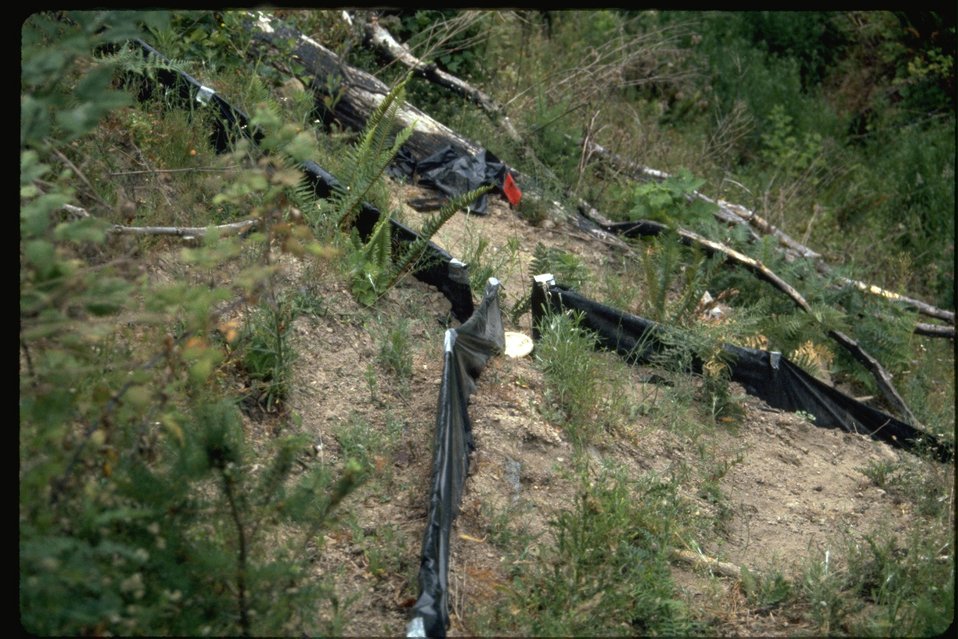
Amphibian trap in clear cut.